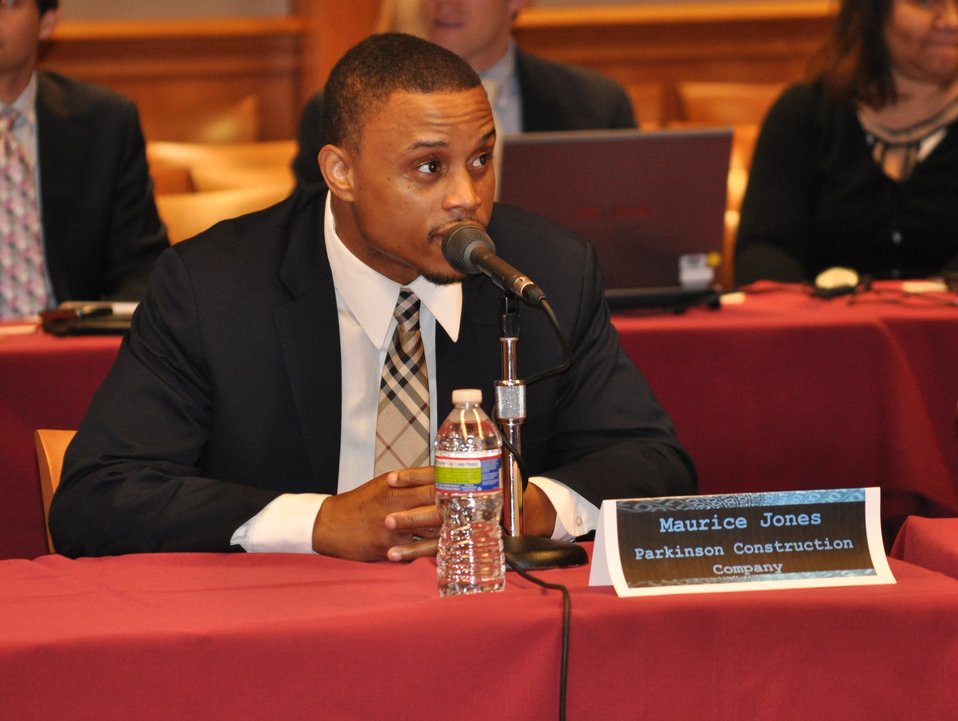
Cybersecurity 5-16

Cybersecurity for Small Business Roundtable; May 16, 2011